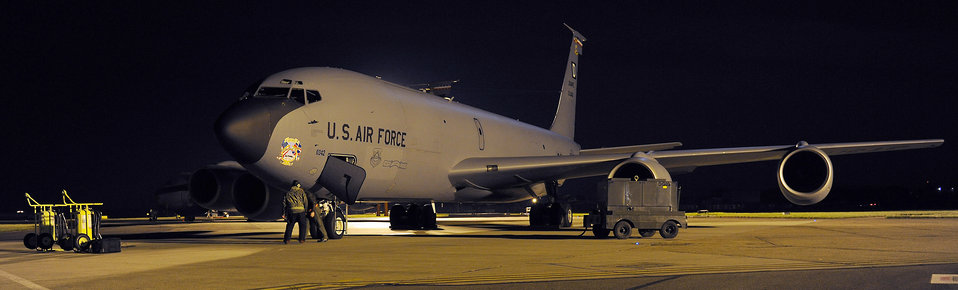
Joint Task Force Odyssey Dawn

110319-F-DE018-038 -- RAF MILDENHALL, England -- Members of the 100th Air Refueling Wing Aircraft Maintenance Squadron and crew members from the 351st Air Refueling Squadron prepare a KC-135 Stratotanker for a refueling mission in support of Joint Task Force Odyssey Dawn. JTF Odyssey Dawn is the U.S. Africa Command task force established to provide operational and tactical command and control of U.S. military forces supporting the international response to the unrest in Libya and enforcement of United